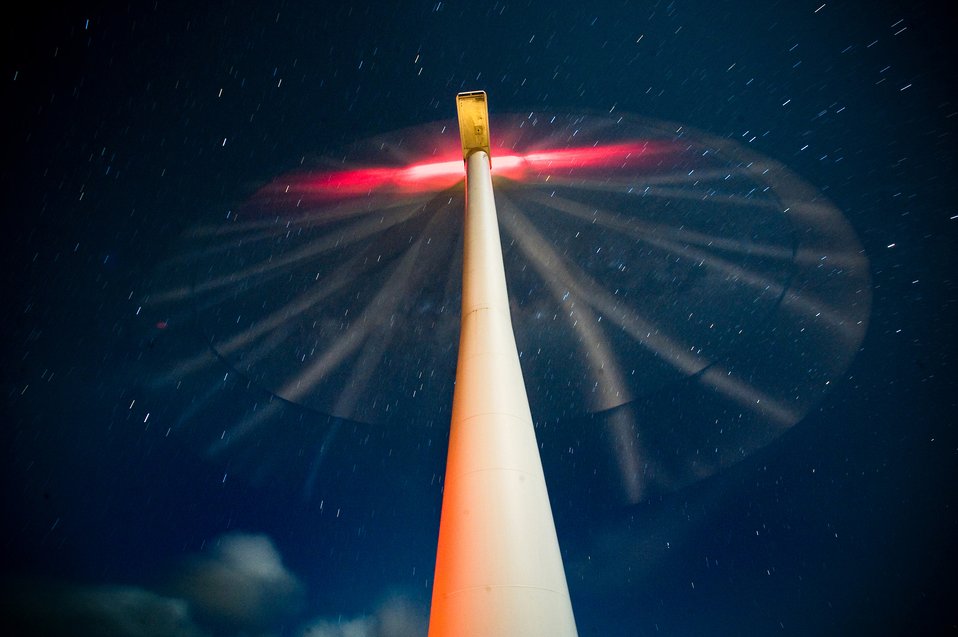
Wind enhancer...

In this long-exposure photo, a 900 kilowatt wind turbine works parallel with diesel generators to power facilities for the 45th Operations Group Detachment 2 on Ascension Auxiliary Airfield, Ascension Island. The Airmen of the detachment support Eastern Range space launches by collecting and disseminating radar, telemetry and tracking data.